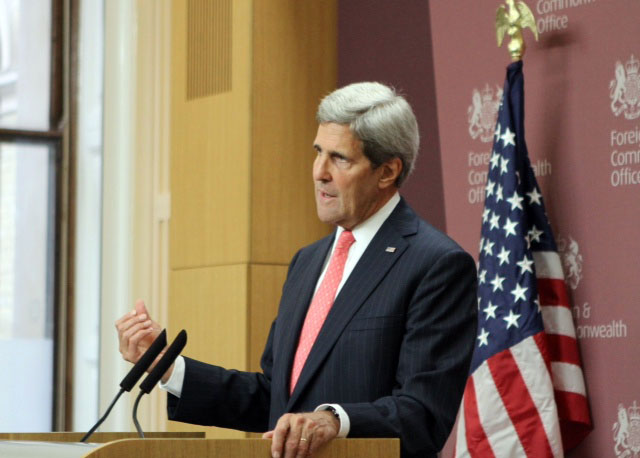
Secretary Kerry Addresses Reporters in London

U.S. Secretary of State John Kerry addresses reporters after the London 11 ministerial meeting on Syria in London, United Kingdom, on October 22, 2013.